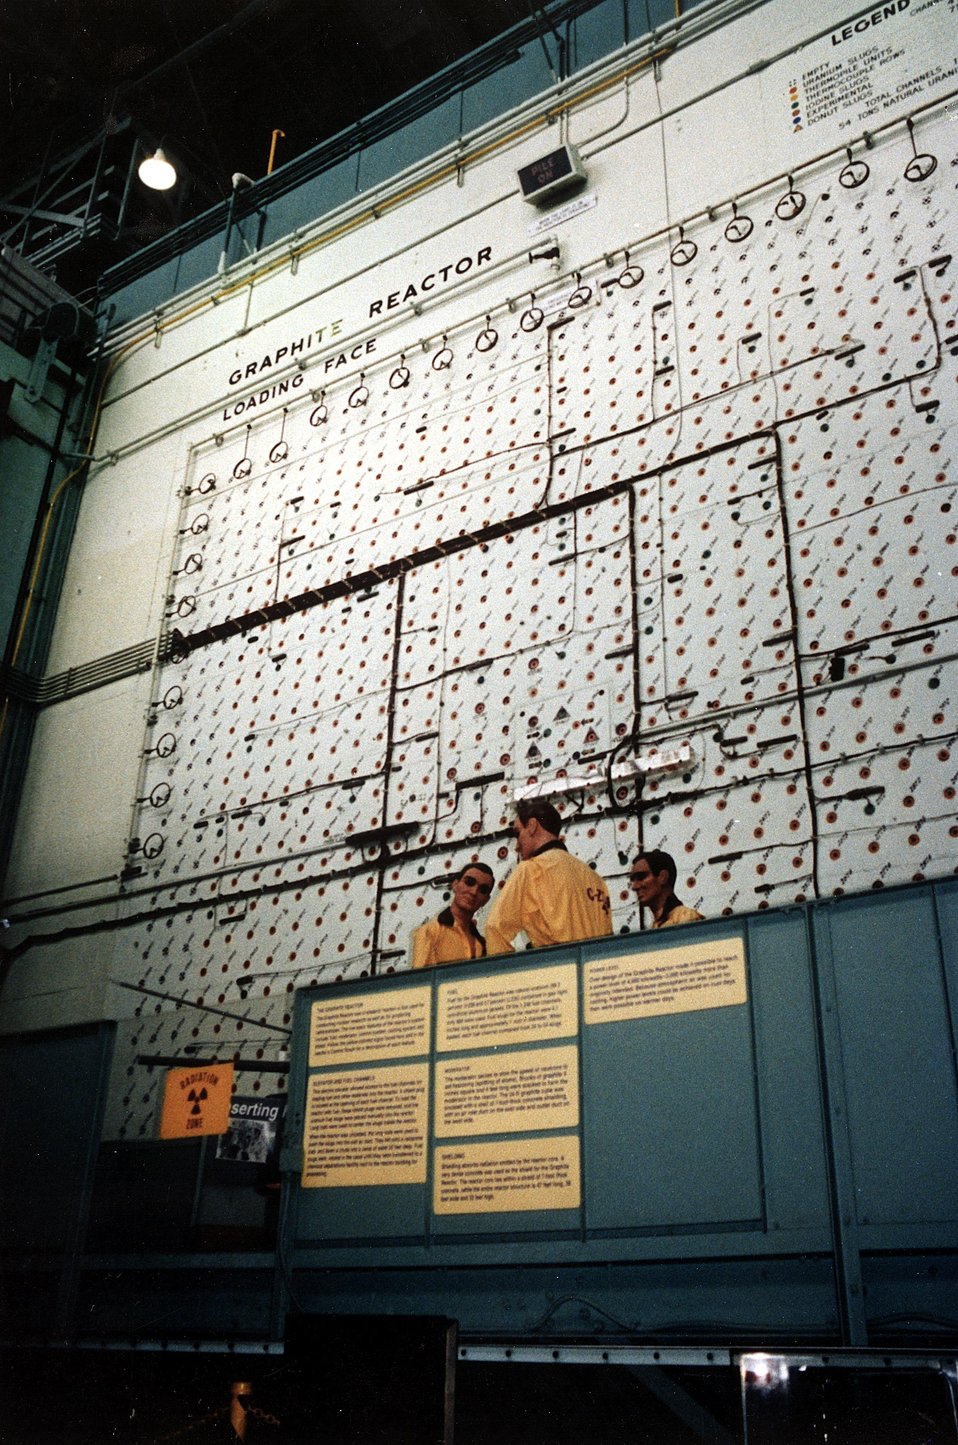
The Oak Ridge Graphite Reactor, code-named 'X-10' produced the world's first gram quantities of plutonium. Circa 1982.